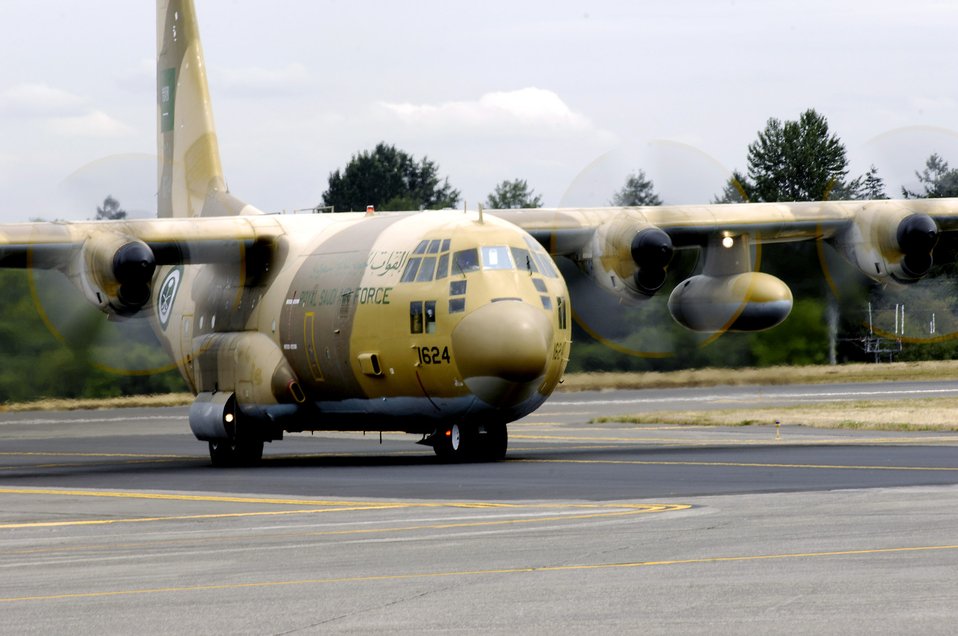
Rodeo 2007

A C-130 from Saudi Arabia taxis after its arrival July 16 at McChord Air Force Base, Wash., for Air Mobility Command's Rodeo 2007. The event is a readiness competition for U.S. and international mobility air forces. It focuses on improving warfighting capabilities and support of the war on terrorism.